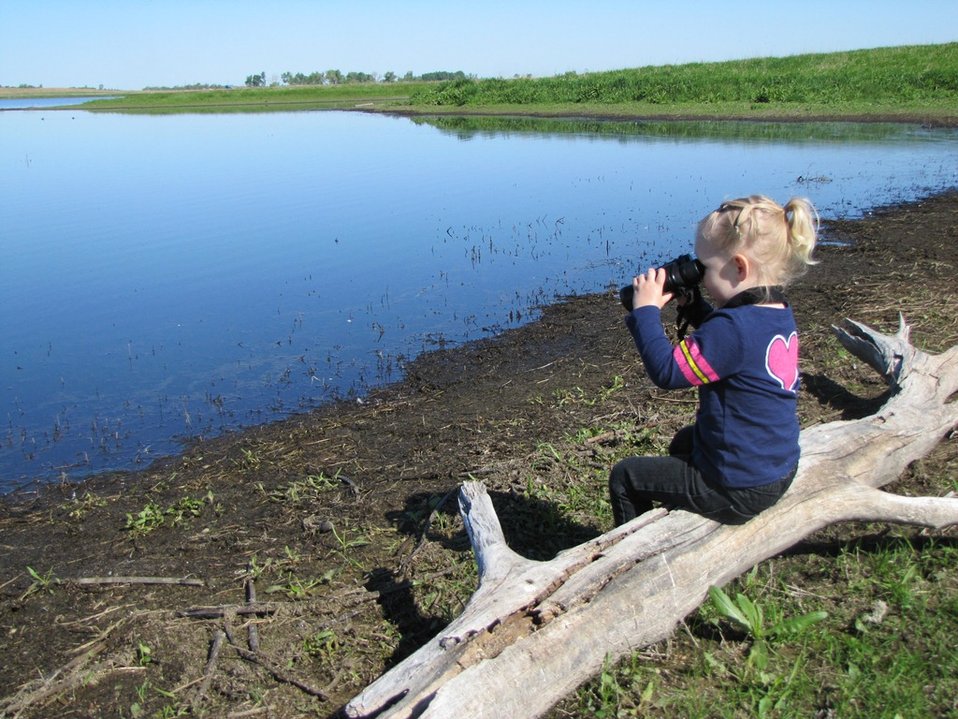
Kites in Flight 2012

A future birder!!